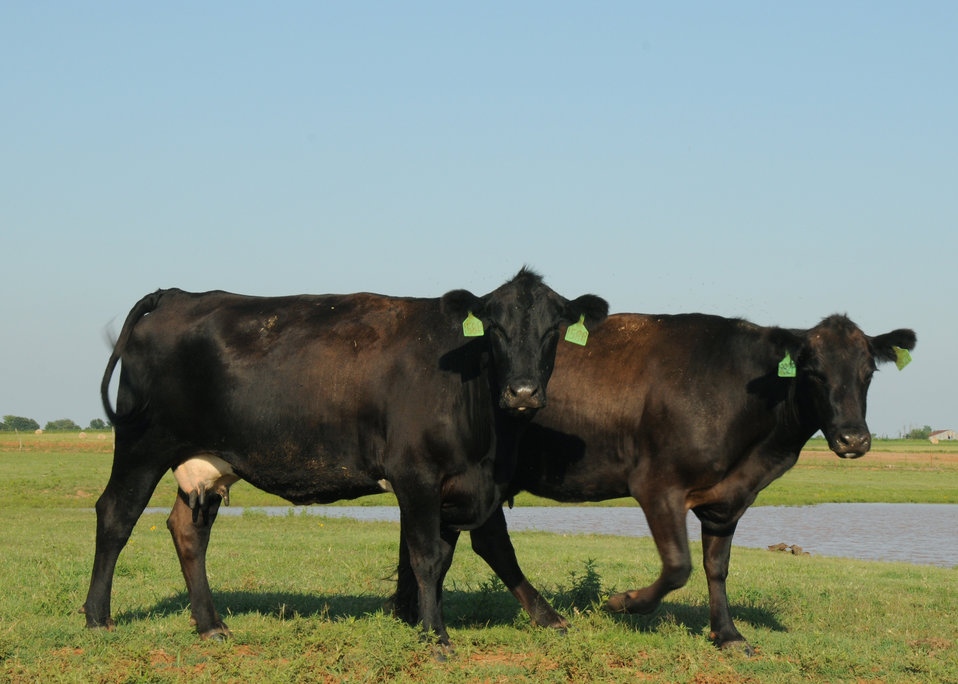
black Angus cows on the Burris farm in McLoud, OK.